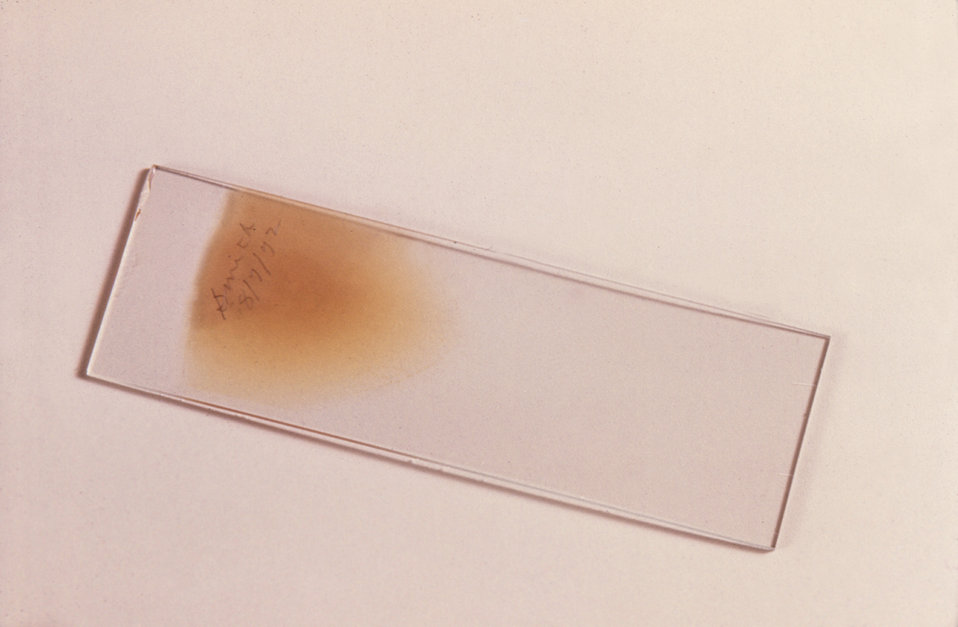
Thin blood films such as this one, should be air-dried, fixed with methyl alcohol, and when dried, immediately stained.